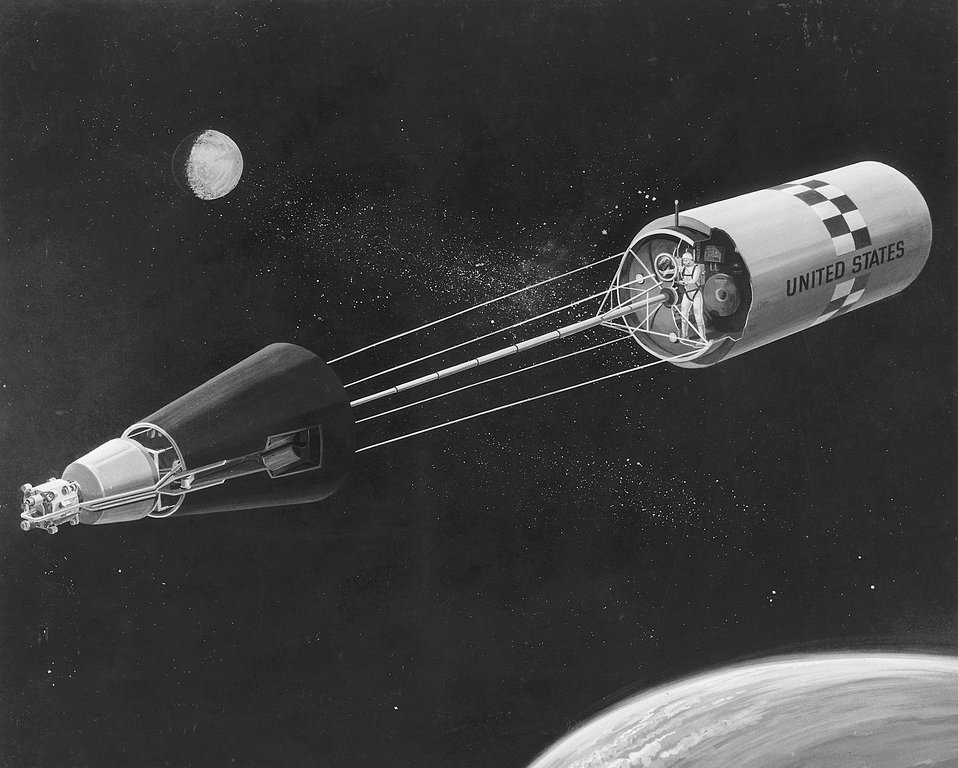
Artist's conception shows a manned space laboratory powered by a nuclear reactor (extreme left).